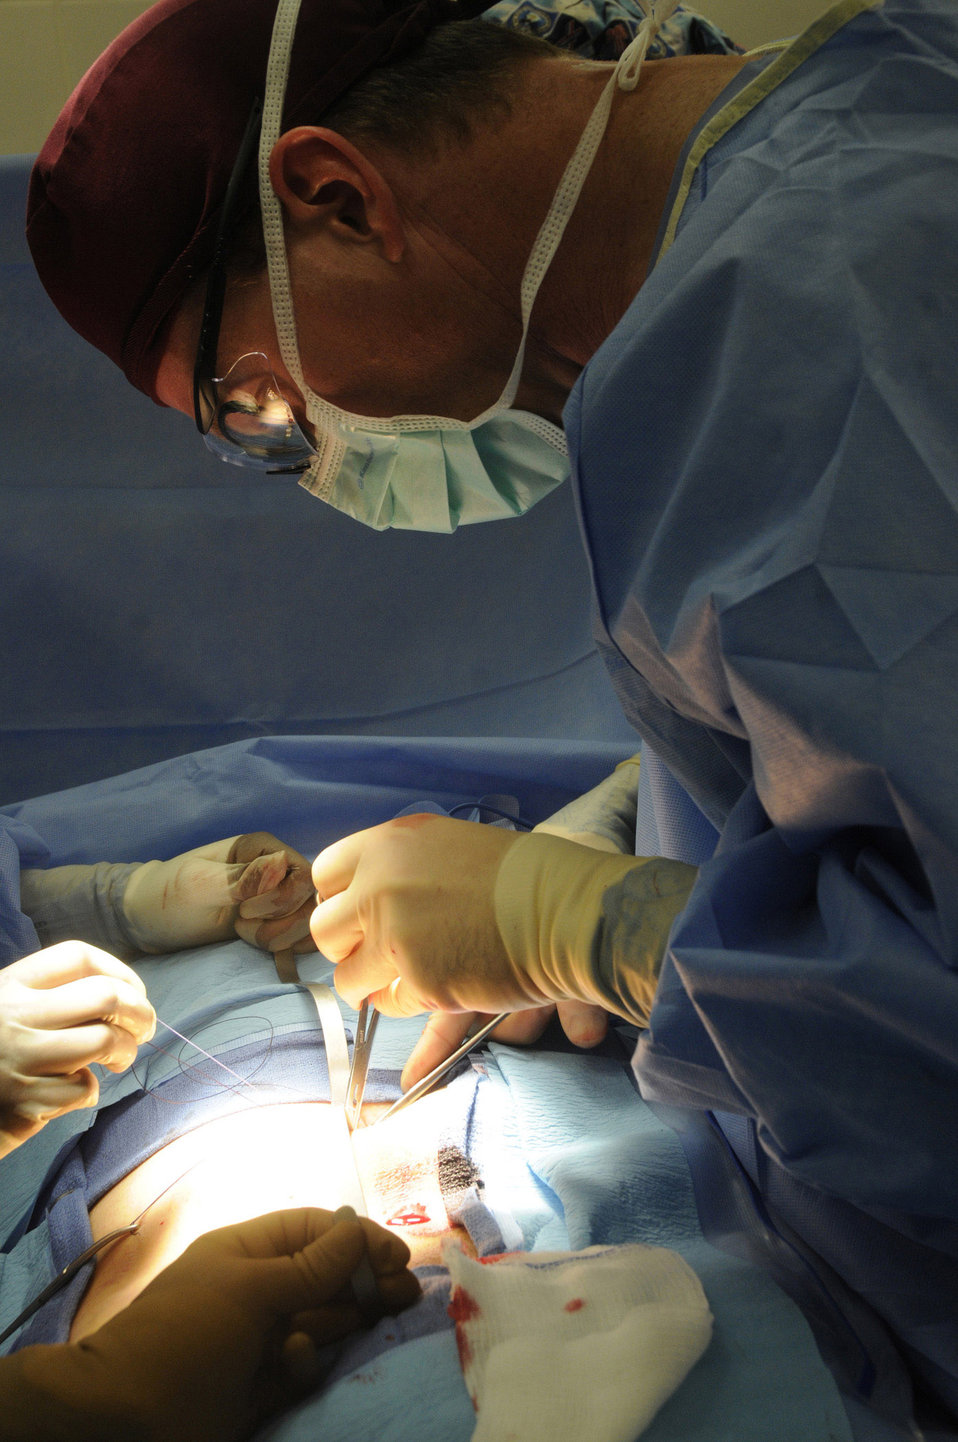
Surgeons return injured troops to action

Dr. (Maj.) Craig Kolasch stitches up an incision after completing a laparoscopic hernia repair Dec. 23 at an undisclosed air base in Southwest Asia. Many of the surgeries performed here are hernia repairs. Doctor Kolasch is a general surgeon assigned to the 379th Expeditionary Medical Group.